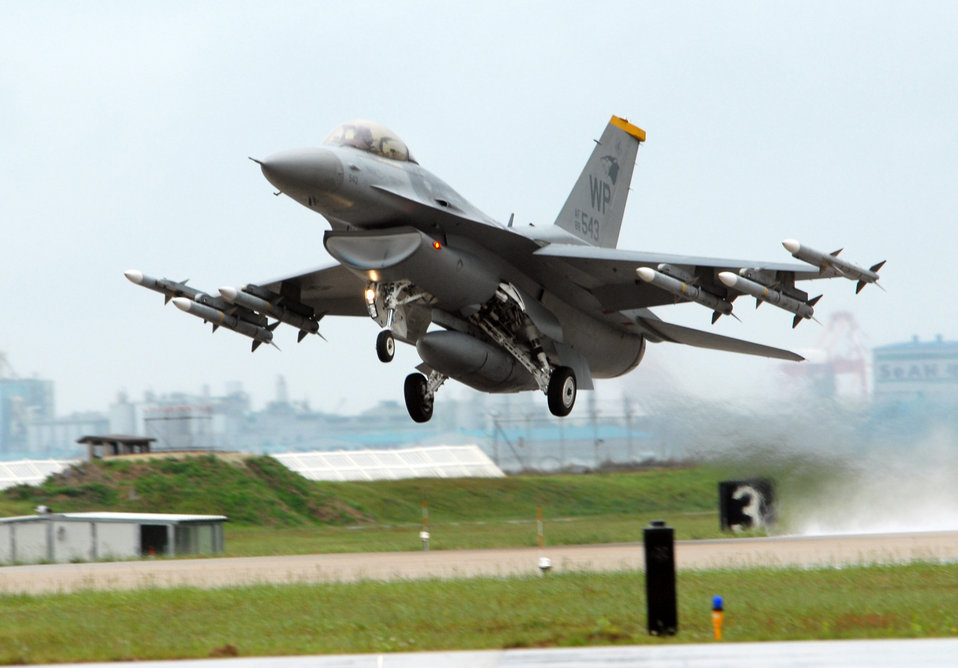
Firepower on the go

An F-16 Fighting Falcon from the 80th Fighter Squadron takes off May 21 at Kunsan Air Base, South Korea, flying to Kadena AB, Japan. The squadron is participating in the 7th Air Force Missile Shoot Exercise that includes all three F-16 Squadrons on the peninsula.